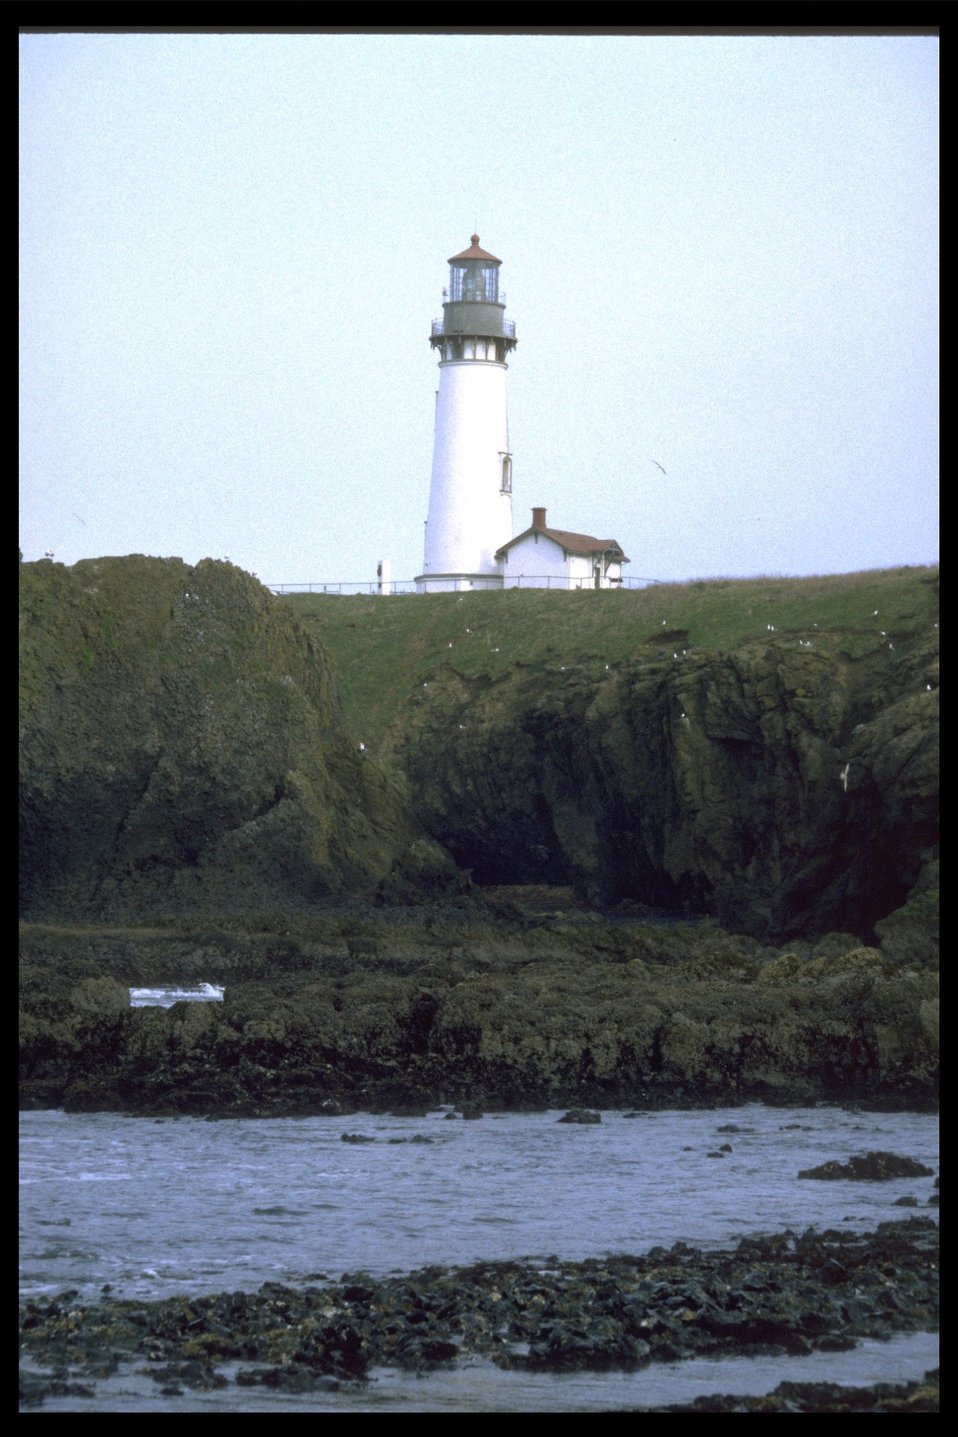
Yaquina Head Lighthouse.